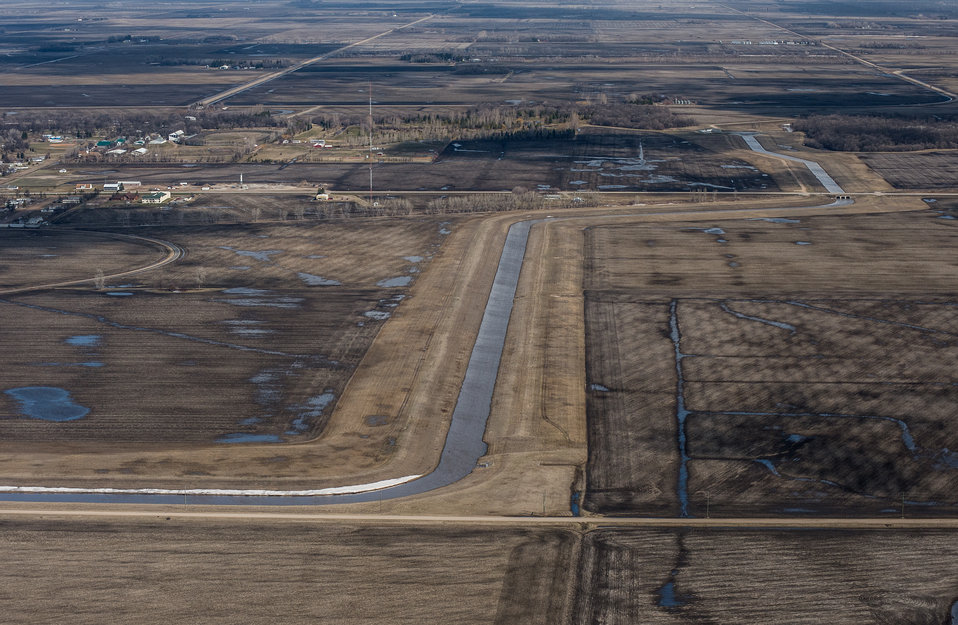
Snake River Diversion, a Public Law PL83-566 Small Watershed Program, at Warren, MN, on Wednesday, May 1, 2013. For information about this and other programs from the USDA Red River Basin Initiative (RRBI) please see www.mn.nrcs.usda.gov/news/features13/RRBI.html.